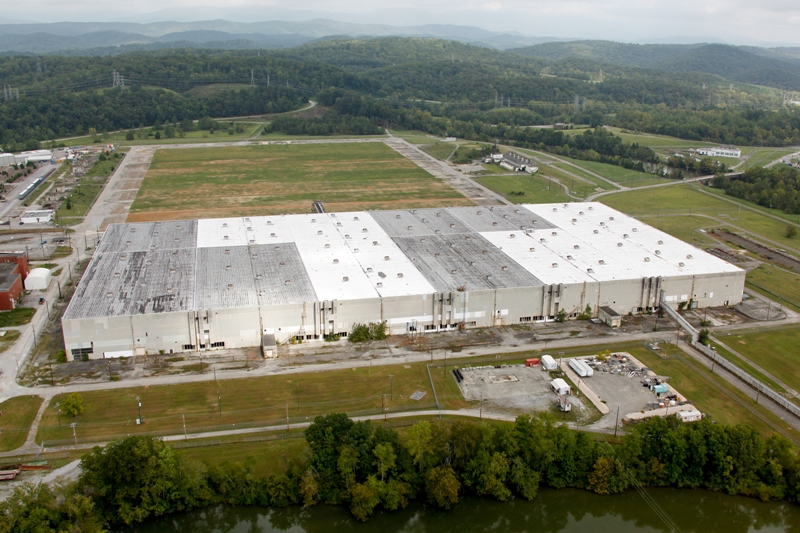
Former K-33 area and K-31

September, 2012

K-31 (front) is one of the last remaining former uranium enrichment plants at Oak Ridge’s East Tennessee Technology Park. The grassy lot behind the facility is the previous site of the K-33 Building. K-33 was demolished in 2011 using Recovery Act funds.